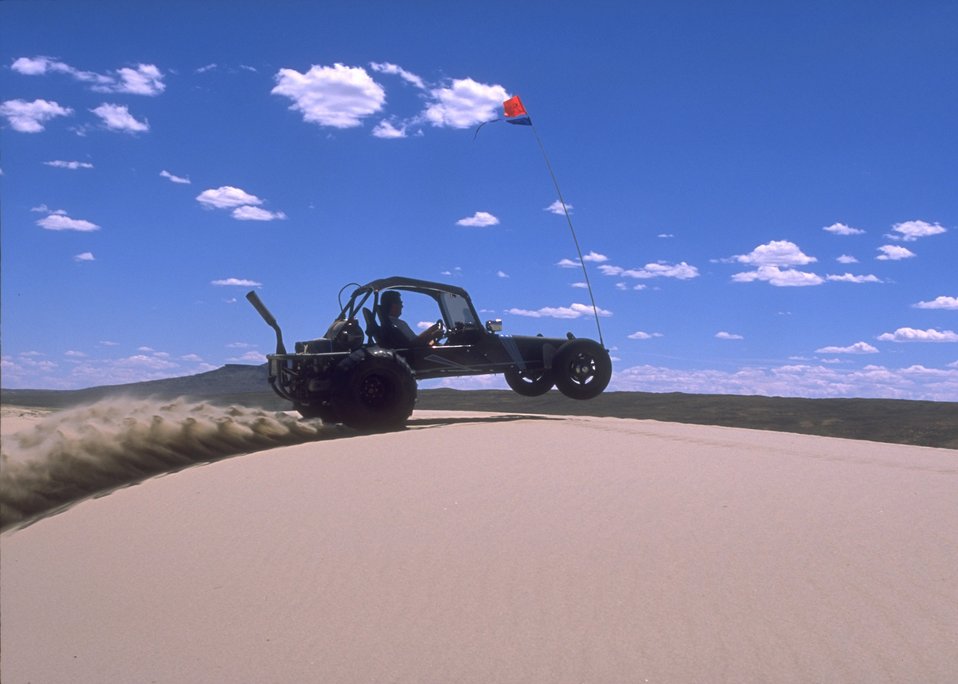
Sand Dunes OHV Area, Rock Springs Field Office.